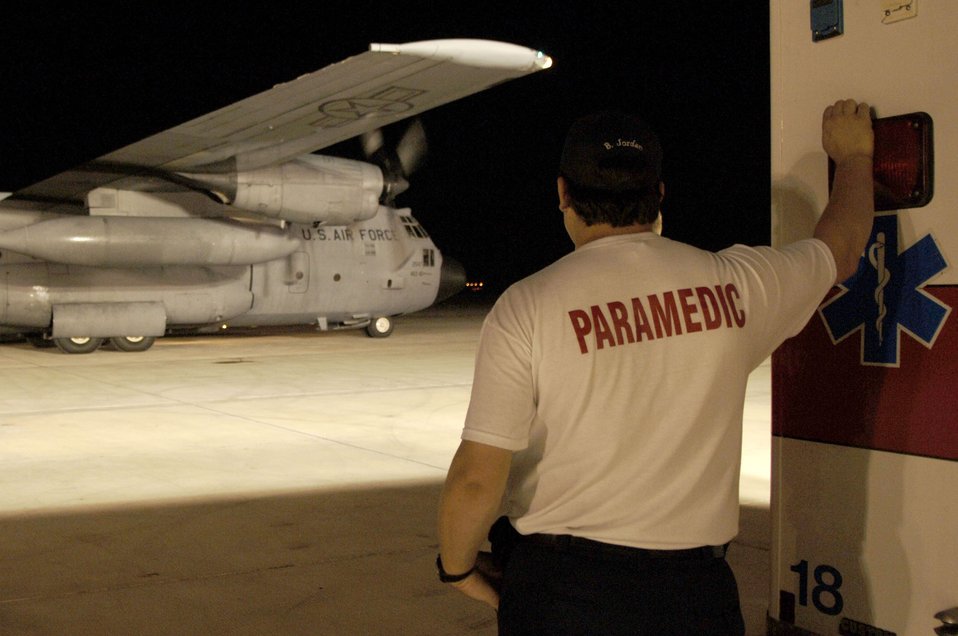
MacDill AFB medical team supports hurricane relief efforts

A paramedic watches as a C-130 Hercules from Little Rock Air Force Base, Ark., comes to a stop on the tarmac in Corpus Christi, Texas, Sept. 11. The C-130 arrived at Corpus Christi to transport patients to a safe location out of Hurricane Ike's path.